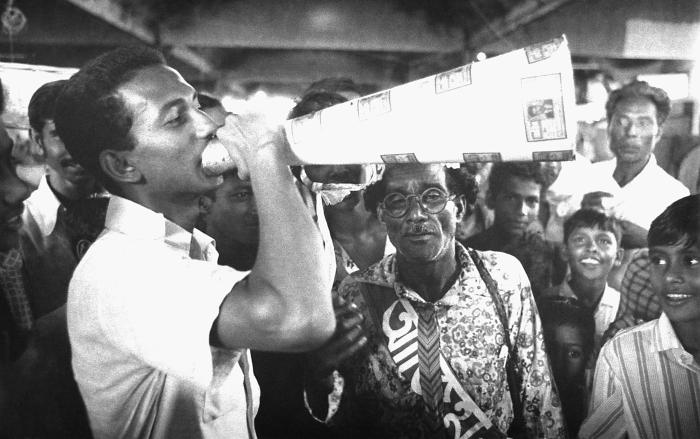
This local smallpox eradication team volunteer was using a makeshift megaphone in order to notify a village crowd of the rewards associated with reporting a confirmed smallpox case. If, indeed, a case was reported, from no matter the source, it was investigated fully, and if confirmed as a smallpox case by an epidemiologist, a reward was paid to the informant, no matter the age, and it was subsequently entered into the 'Containment Book'.